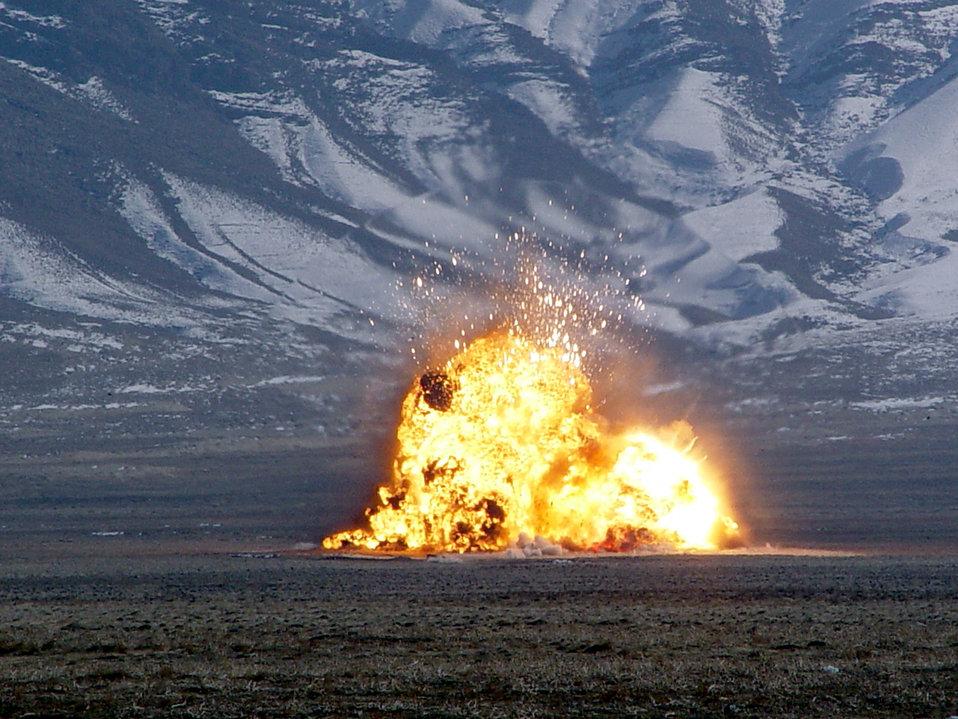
Massive weapons destruction

BAGRAM AIR BASE, Afghanistan -- Hundreds of Taliban weapons found by agents from the Air Force Office of Special Investigations' anti-terrorism specialty team are destroyed in a controlled explosion. The team is deployed from OSI Detachment 252 at Lackland Air Force Base, Texas.